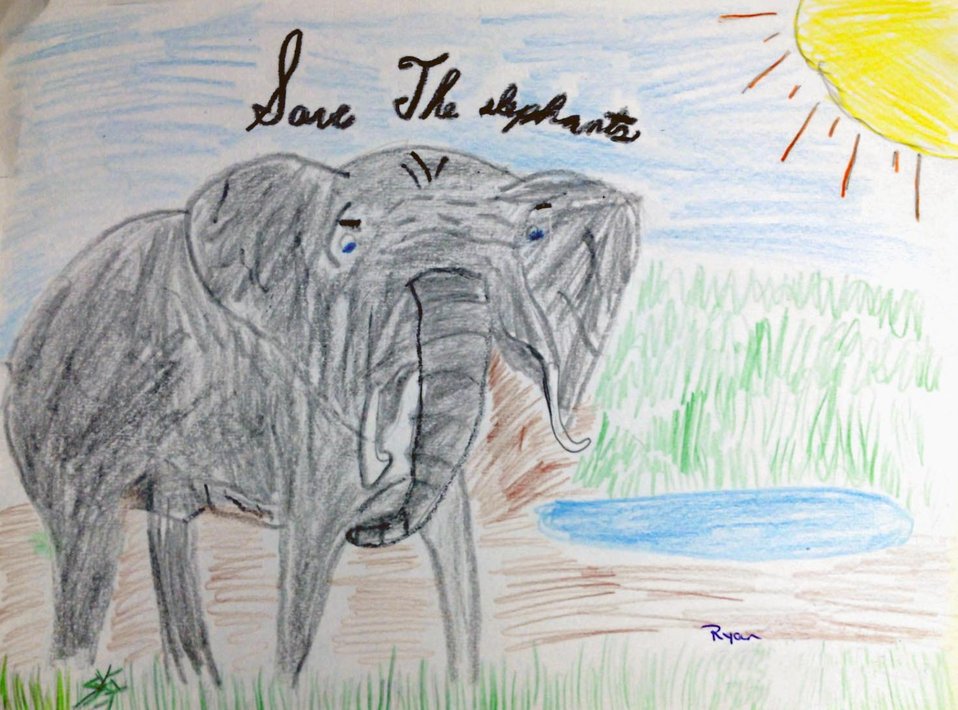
Drawing by Ryan